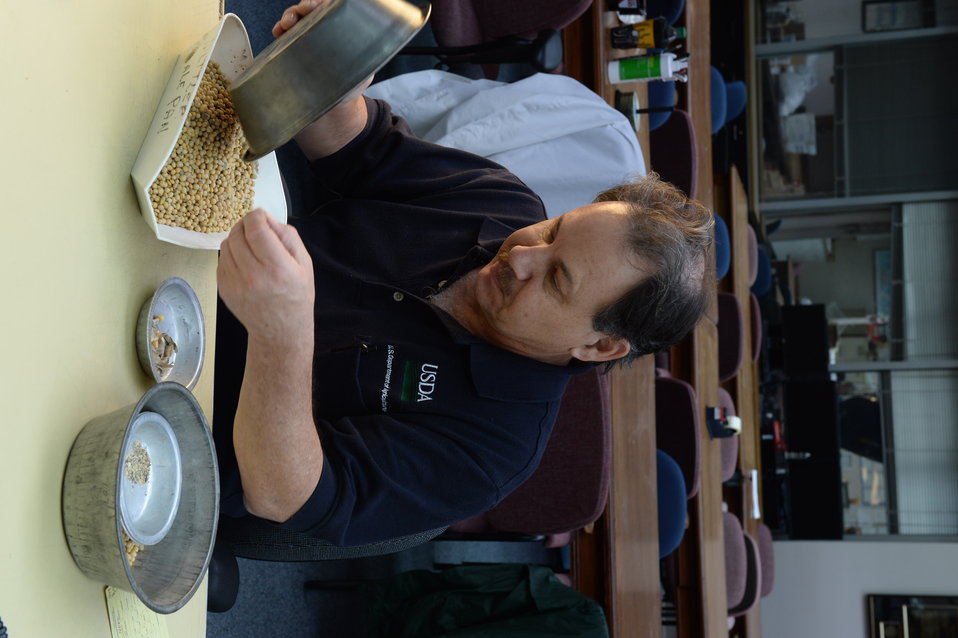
U.S. Department of Agriculture (USDA) Grain Inspection, Packers and Stockyards Administration (GIPSA) Federal Grain Inspection Service (FGIS) employee examines grain samples at the FGIS inspection laboratory in New Orleans, LA on Monday, Nov. 18, 2013.